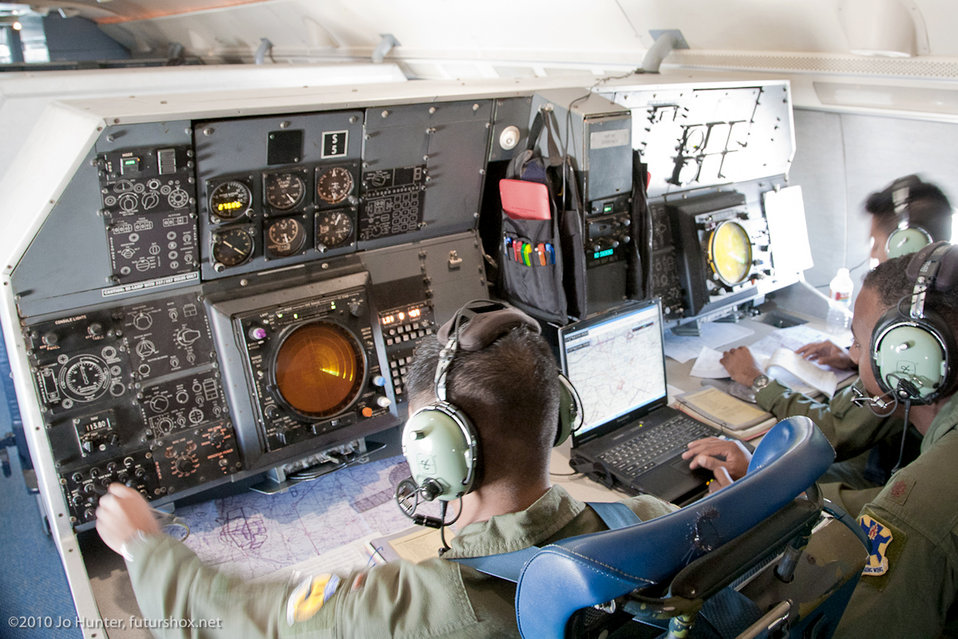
T-43 retirement

A combat systems officer trainer instructs students Sept. 1, 2010, aboard a T-43. The T-43, a CSO training aircraft since 1973, was officially retired Sept. 17, 2010.